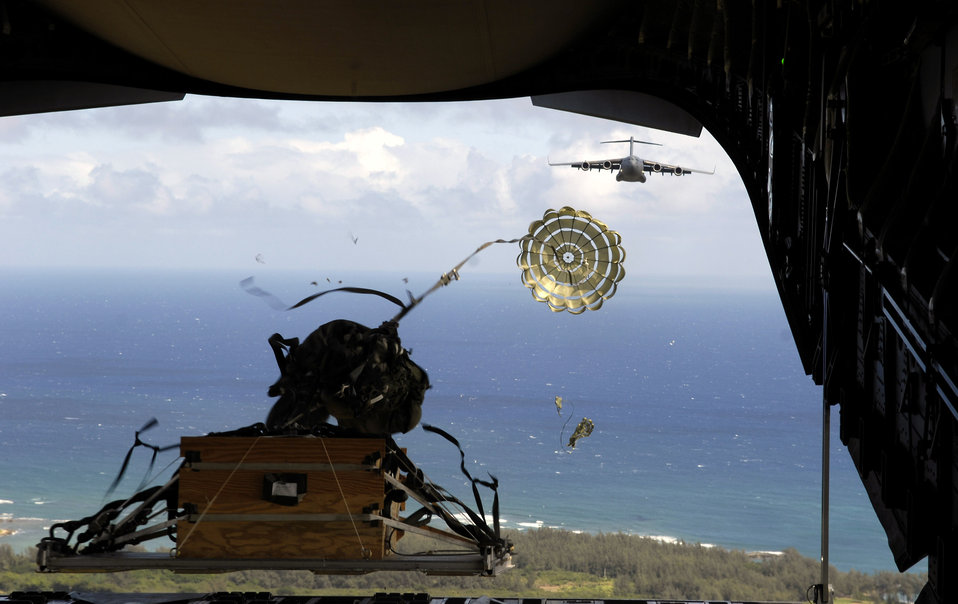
Hickam Airmen conduct 4-ship C-17 airdrop training

A practice pallet is released from the back of a C-17 Globemaster III during an airdrop training mission Aug. 13 over the Pacific. C-17s from the 535th Airlift Squadron of Hickam Air Force Base, Hawaii, took part in a four-ship, multi-element airdrop training mission to maintain currency and proficiency.